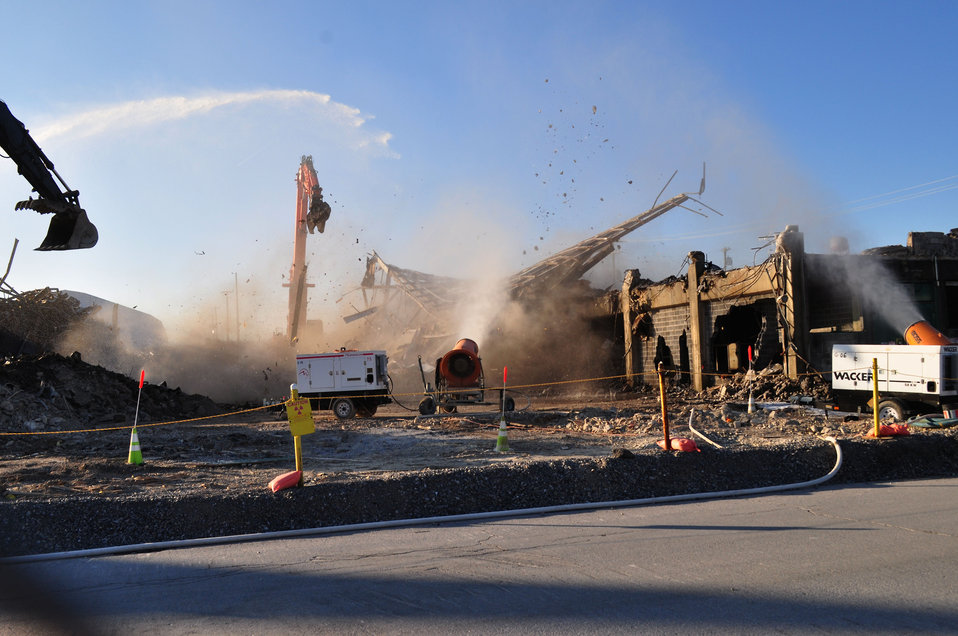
DandD of K-25 North Tower

13-005 DOE photo Lynn Freeny 1-23-2013 ETTP North Tower K-25 Oak Ridge Tennessee